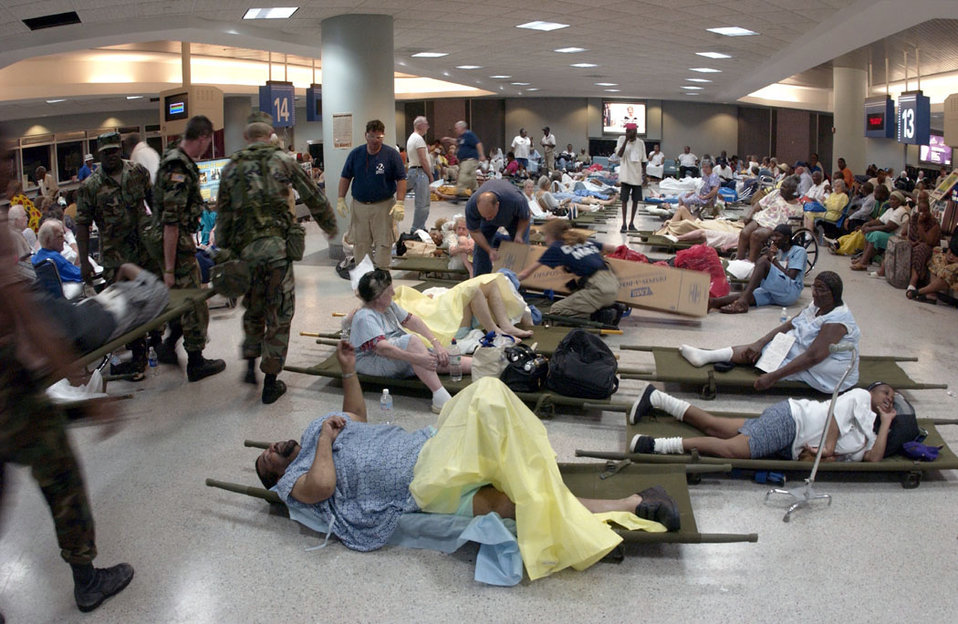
Air Force evacuates the sick and wounded

NEW ORLEANS -- Patients are evacuated to triage areas inside the airport Sept. 2. Thousands of victims have been flown here since evacuations began Aug. 31.